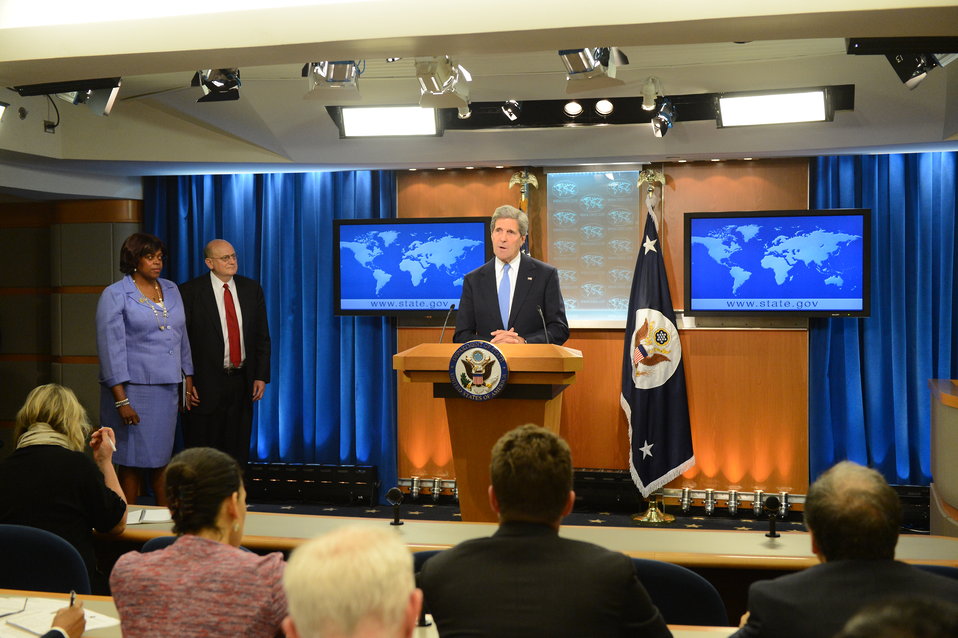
Secretary Kerry Releases the 2012 International Religious Freedom Report

U.S. Secretary of State John Kerry releases the 2012 International Religious Freedom Report at the U.S. Department of State in Washington, D.C., on May 20, 2013.